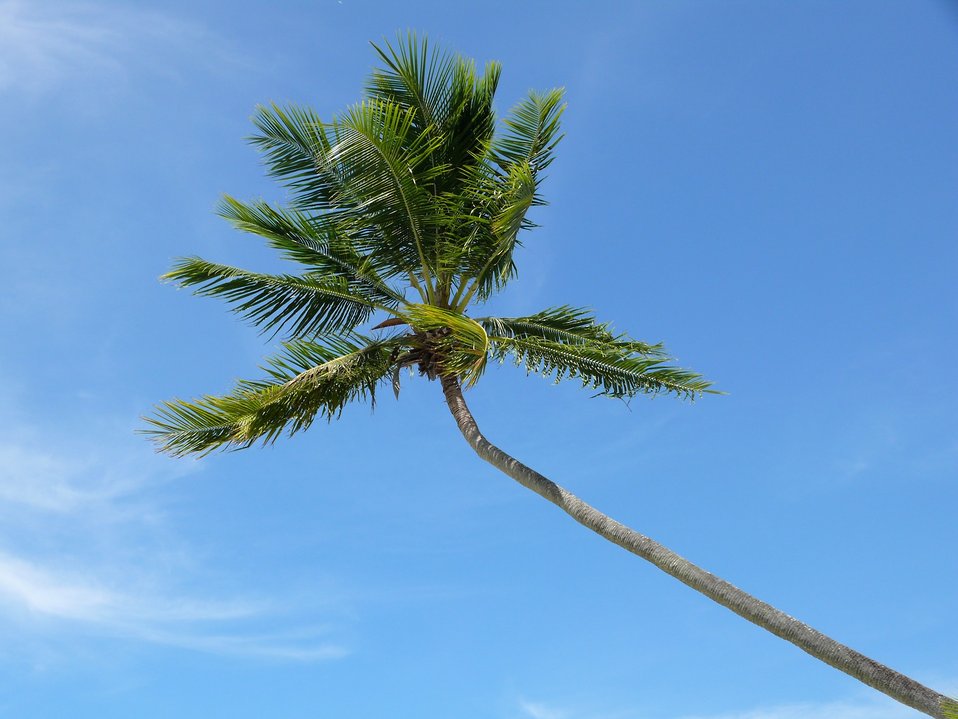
Coconut tree.